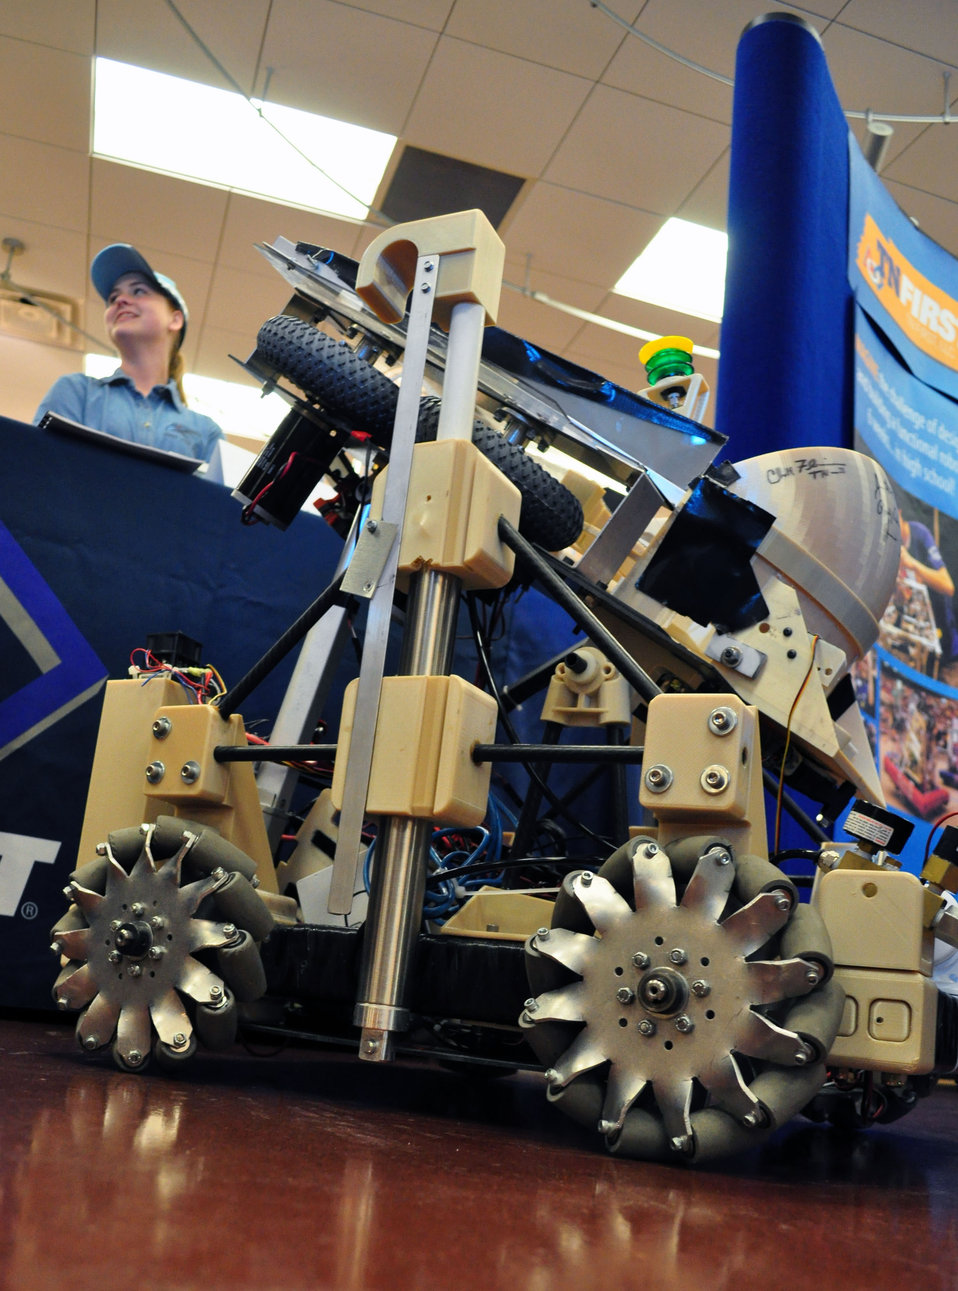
Tennessee Valley Corridor 2013 Oak Ridge

13-062 DOE photo Lynn Freeny 5-29-2013 Oak Ridge Tennessee